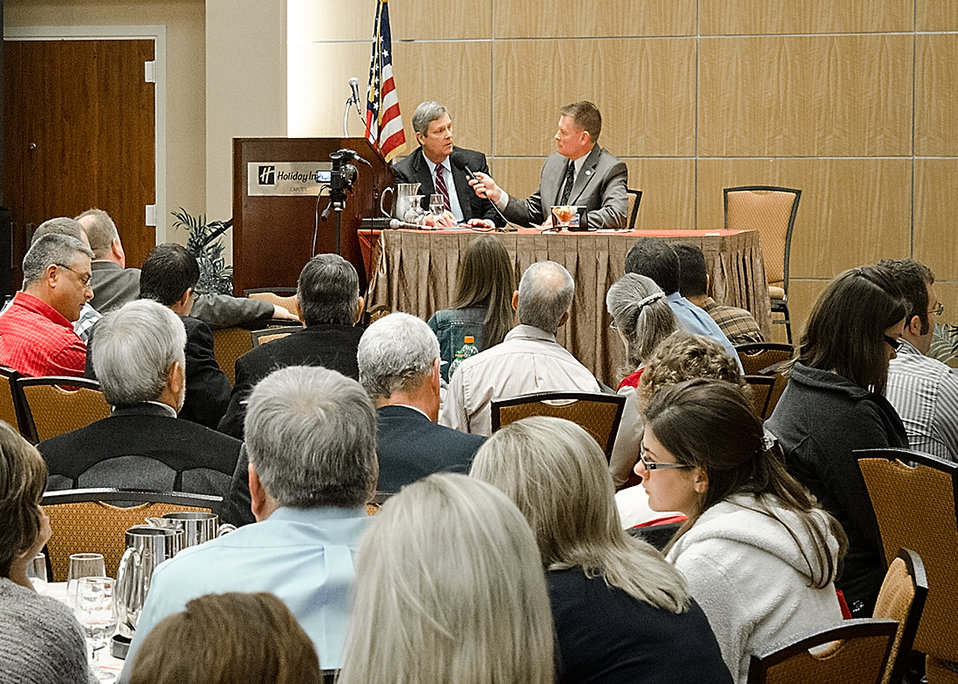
Agriculture Secretary Tom Vilsack (left) interviewed with Agritalk Host Mike Adams (right), during a meeting with the Missouri Farm Bureau in Washington, D.C., on Tuesday, March 20, 2012. Agritalk, The Voice of Rural America is a radio network based in St. Louis, Missouri reaching out to the American Mid-West.